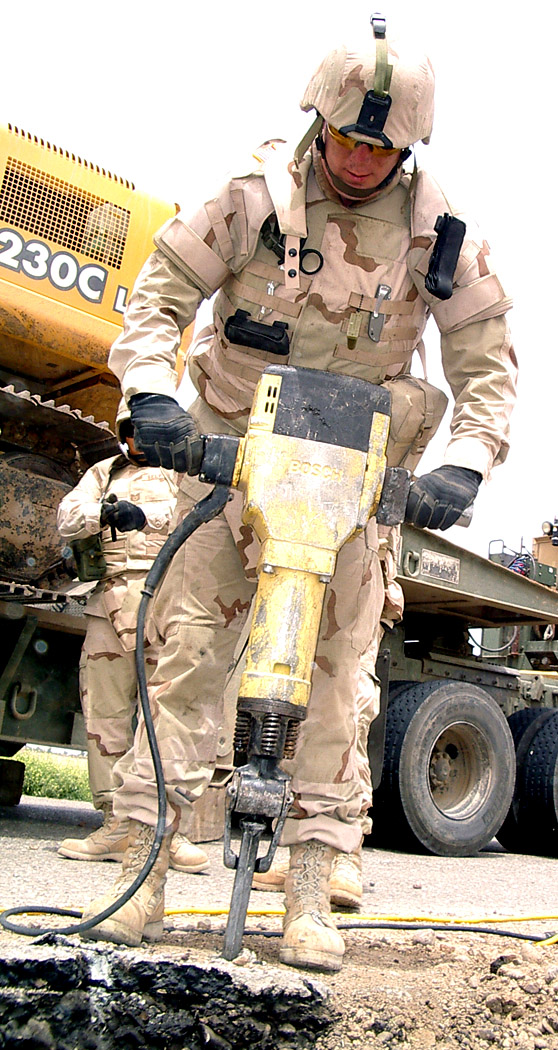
Combat Airmen keep convoy routes open

Tech. Sgt. Mattheu Gustafson uses a jackhammer to prepare an improvised explosive device crater for concrete on Monday, July 17, in Iraq. Members of the 732nd Expeditionary Civil Engineer Squadron's Detachment 10 are responsible for maintaining and repairing convoy routes and construction projects at forward-operating bases in Iraq.